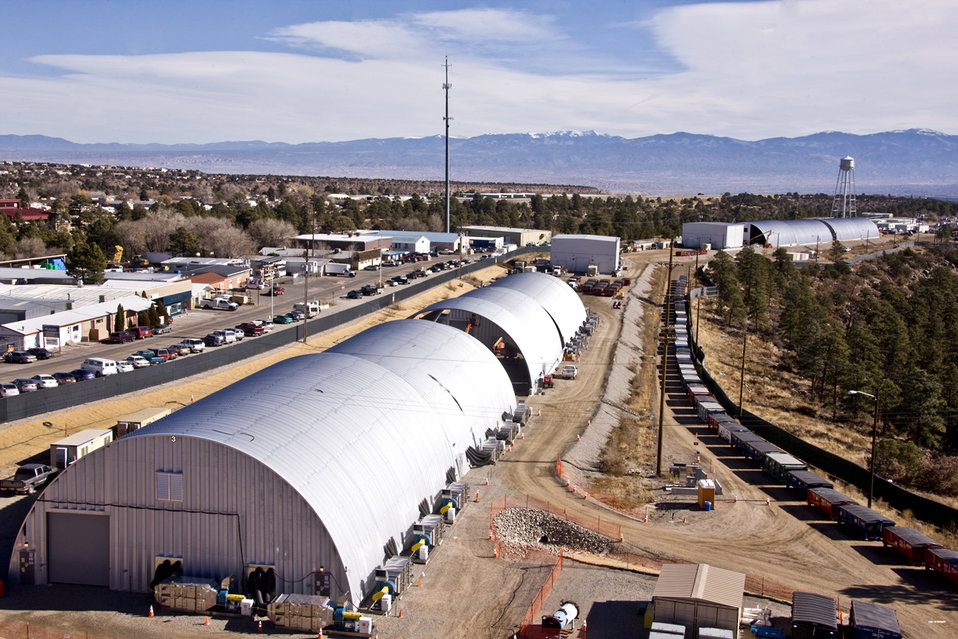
In Recovery Act Cleanup of WWII Waste Site, Safety Means Preparing for the Unexpected

The excavation of Material Disposal Area B is occurring inside large metal enclosures. The proximity of local businesses spurred extra safety precautions.